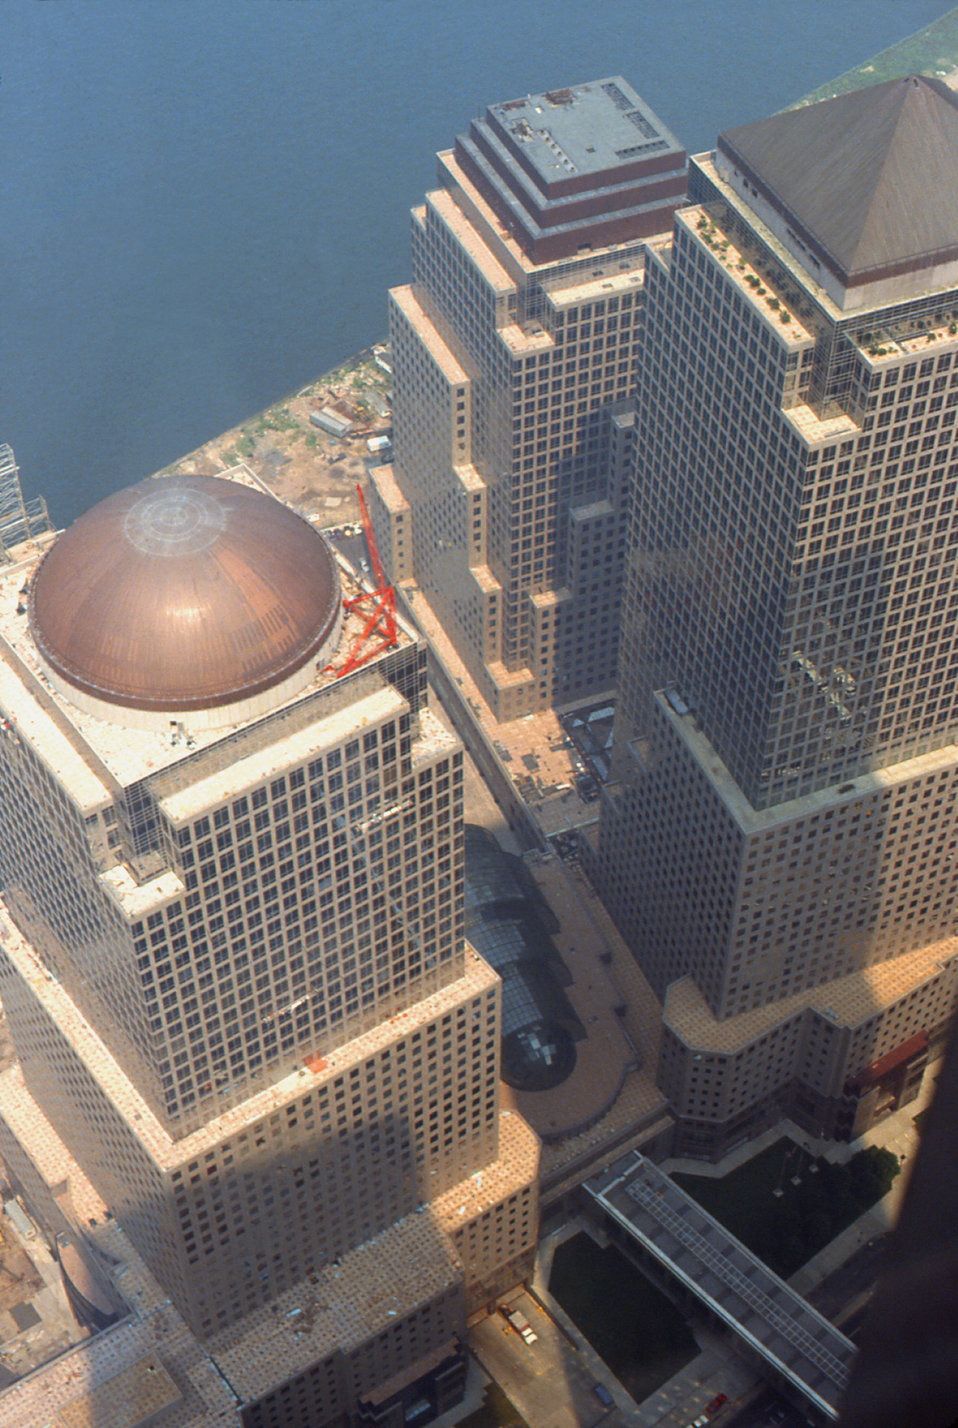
This 'aerial' view of Manhattan was taken while looking west from the 110th floor of the former World Trade Center Tower 2, also known as the South Tower, in New York City, New York. The copper dome of the Two World Financial Center Building could be seen on the left. The building to the right in the foreground was the Three World Financial Center, while just behind it, the Four World Financial Center building could be seen, and the Hudson River was visible in the background.